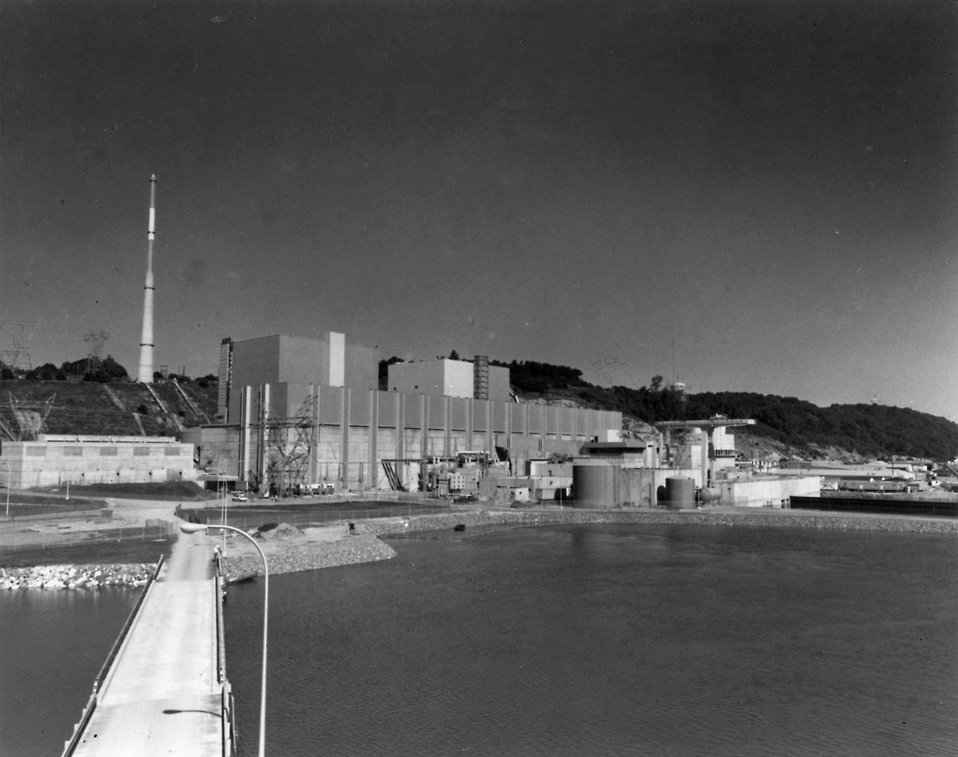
Units 2 and 3 of Peach Bottom (Pa.) Atomic Power Station. The station uses two General Electric boiling water reactors. Circa 1974.